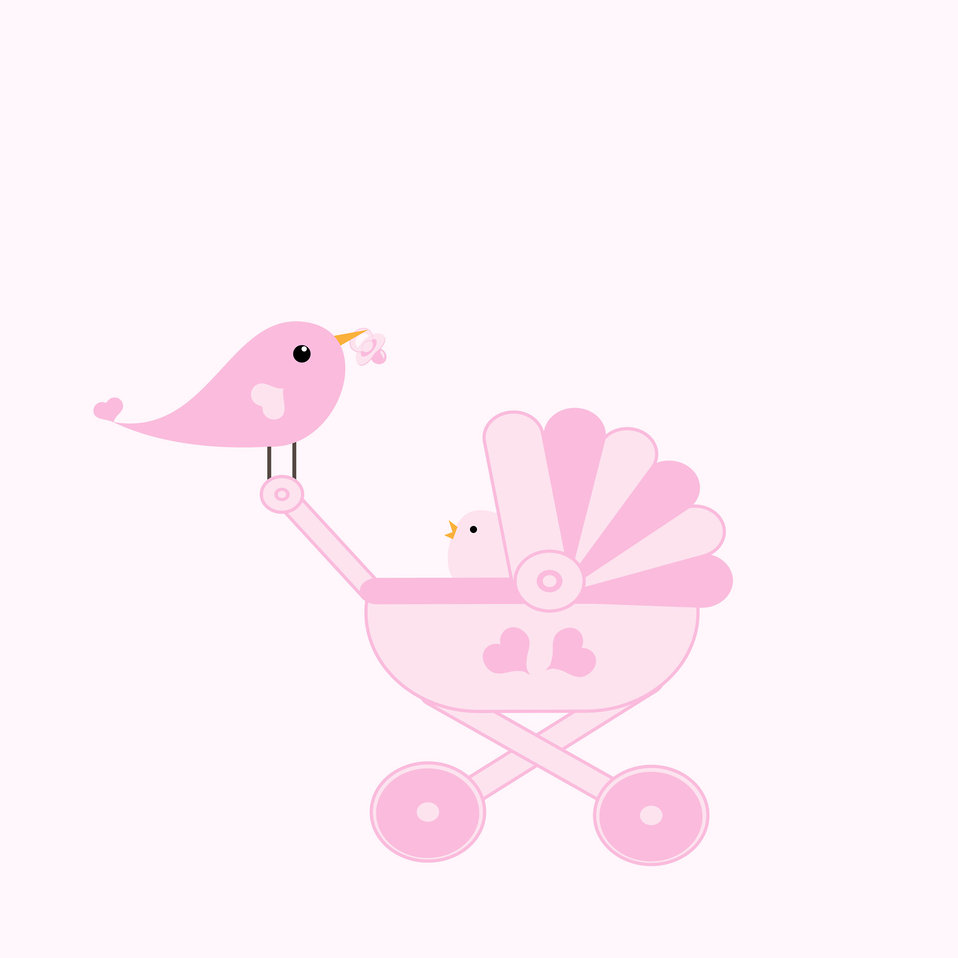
Baby girl background

Cute birds in baby pink for baby girl card template.